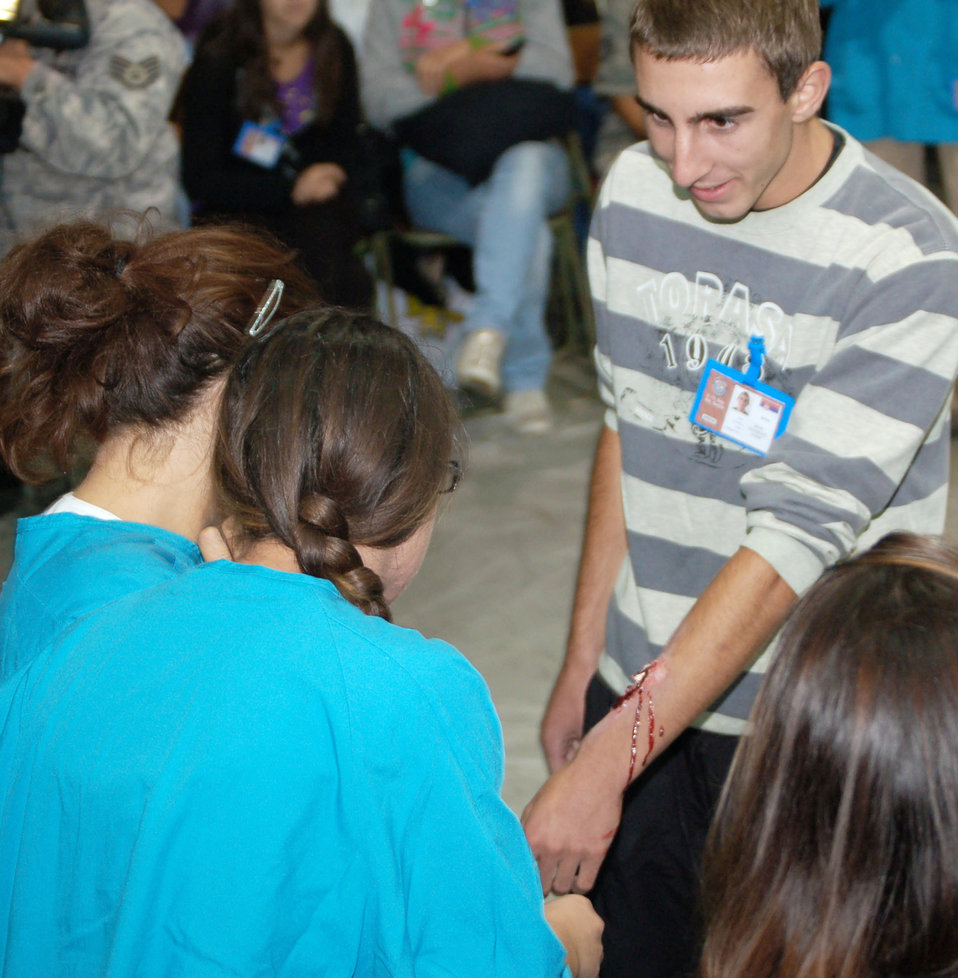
Airmen teach moulage to medical students

Milan Jovanovic shows off a mock open fracture to his classmates Sept. 8 during moulage training conducted by Airmen of the 86th Medical Group from Ramstein Air Base, Germany, in Nis, Serbia. Fifty students from the school participated as